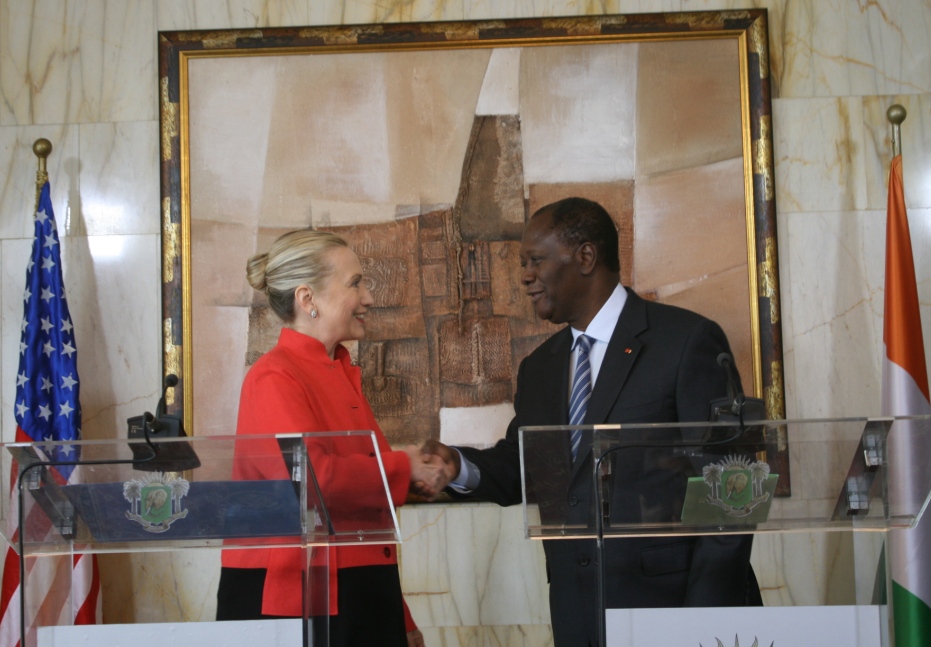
Secretary Clinton Shakes Hands With Ivoirian President Ouattara

U.S. Secretary of State Hillary Rodham Clinton shakes hands with Ivoirian President Alassane Ouattara after their joint press conference at the Presidential Palace in Abidjan, Cote d’Ivoire, on January 17, 2012.